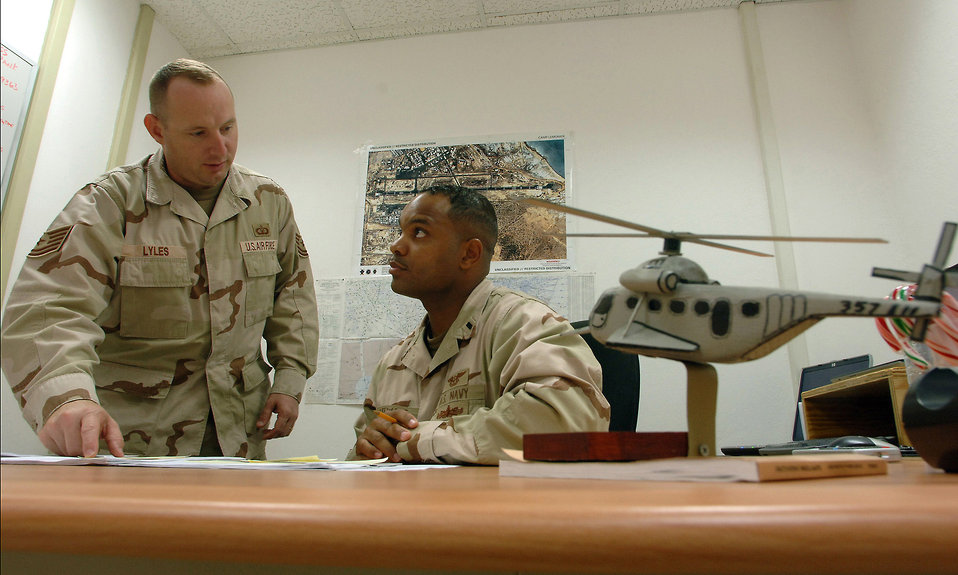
Airmen advise Djiboutian air traffic controllers

Navy Lt. j.g. Stewart Arthur and Tech. Sgt. Brian Lyles manage 10 Air Force and Navy servicemembers who partner with Djiboutian civilians and French military in guiding all aircraft flying in and out of the airfield shared by Camp Lemonier and the Djibouti-Ambouli airport. They are the enlisted and commissioned air traffic and early warning control officers assigned to Combined Joint Task Force-Horn of Africa headquarters at Camp Lemonier, Djibouti. Lieutenant Arthur is deployed from Naval Air Station North Island, San Diego, Calif., and Sergeant Lyles is deployed from Royal Air Force Mildenhall, England.